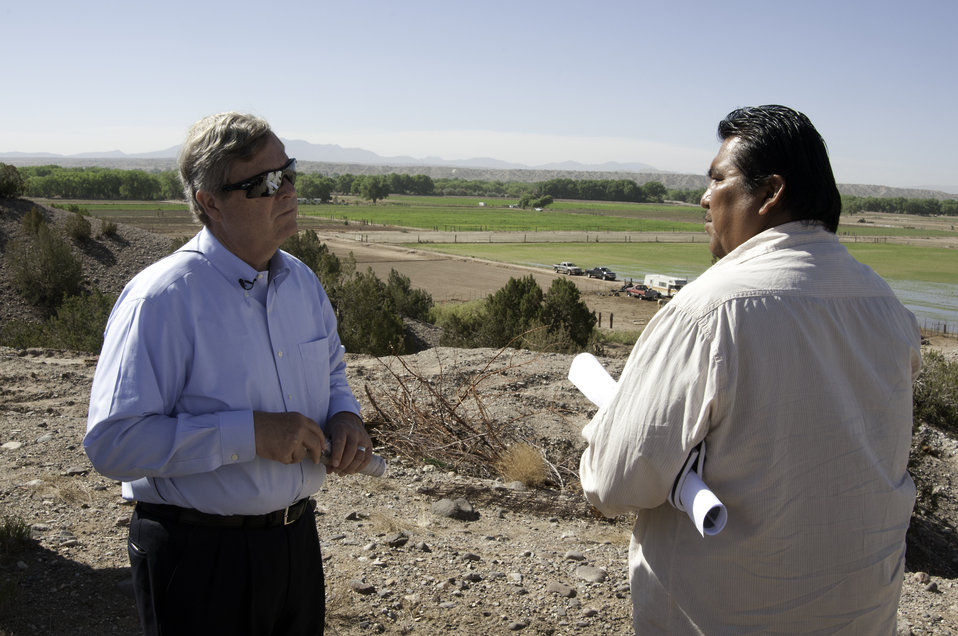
Agriculture Secretary Tom Vilsack meets with New Mexico producers and community stakeholders to highlight the U.S. Department of Agriculture’s (USDA) StrikeForce Initiative opportunities and the importance of comprehensive immigration reform in Albuquerque, NM on Thursday, Jun. 20, 2013.